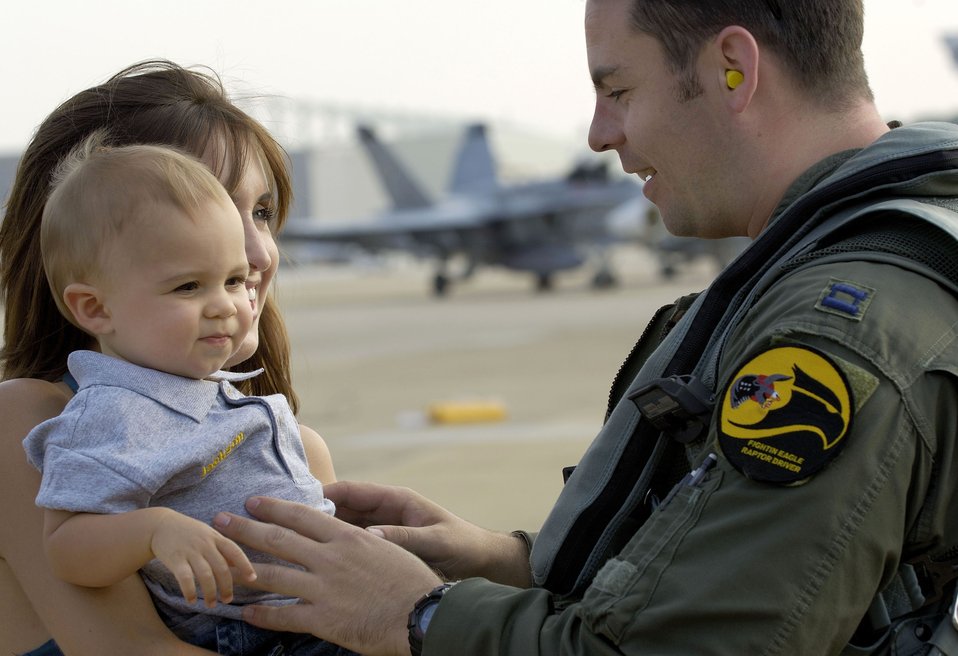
Raptors await return of roost

Capt. John Echols is greeted by his son, Jackson, and wife, Megan, after arriving at Naval Air Station Oceana, Va., on Friday, June 30. The 27th Fighter Squadron, along with the 71st and 94th FS from Langley Air Force Base, Va., are flying sorties from other installations because of runway repairs at their home station. Captain Echols, who just returned from Elmendorf AFB, Alaska, is an F-22 Raptor pilot assigned to the 27th FS.